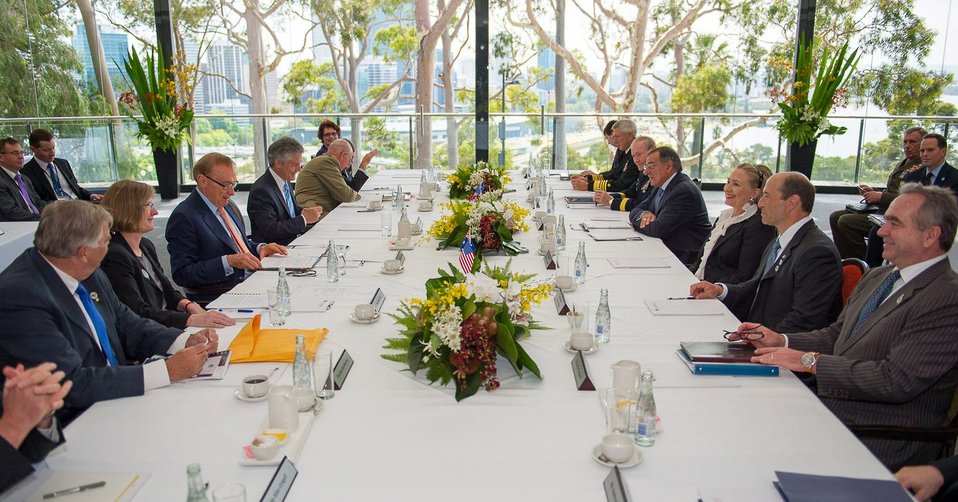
Secretaries Clinton and Panetta Participate in the AUSMIN Working Lunch with Australian Ministers Carr and Smith

U.S. Secretary of State Hillary Rodham Clinton and U.S. Secretary of Defense Leon Panetta participate in the AUSMIN working lunch with their Australian counterparts, Australian Foreign Minister Robert Carr and Australian Defense Minister Stephen Smith, in Perth, Australia, November 14, 2012. [U.S. Embassy in Canberra, Australia photo by Travis Longmore/ Public Domain]